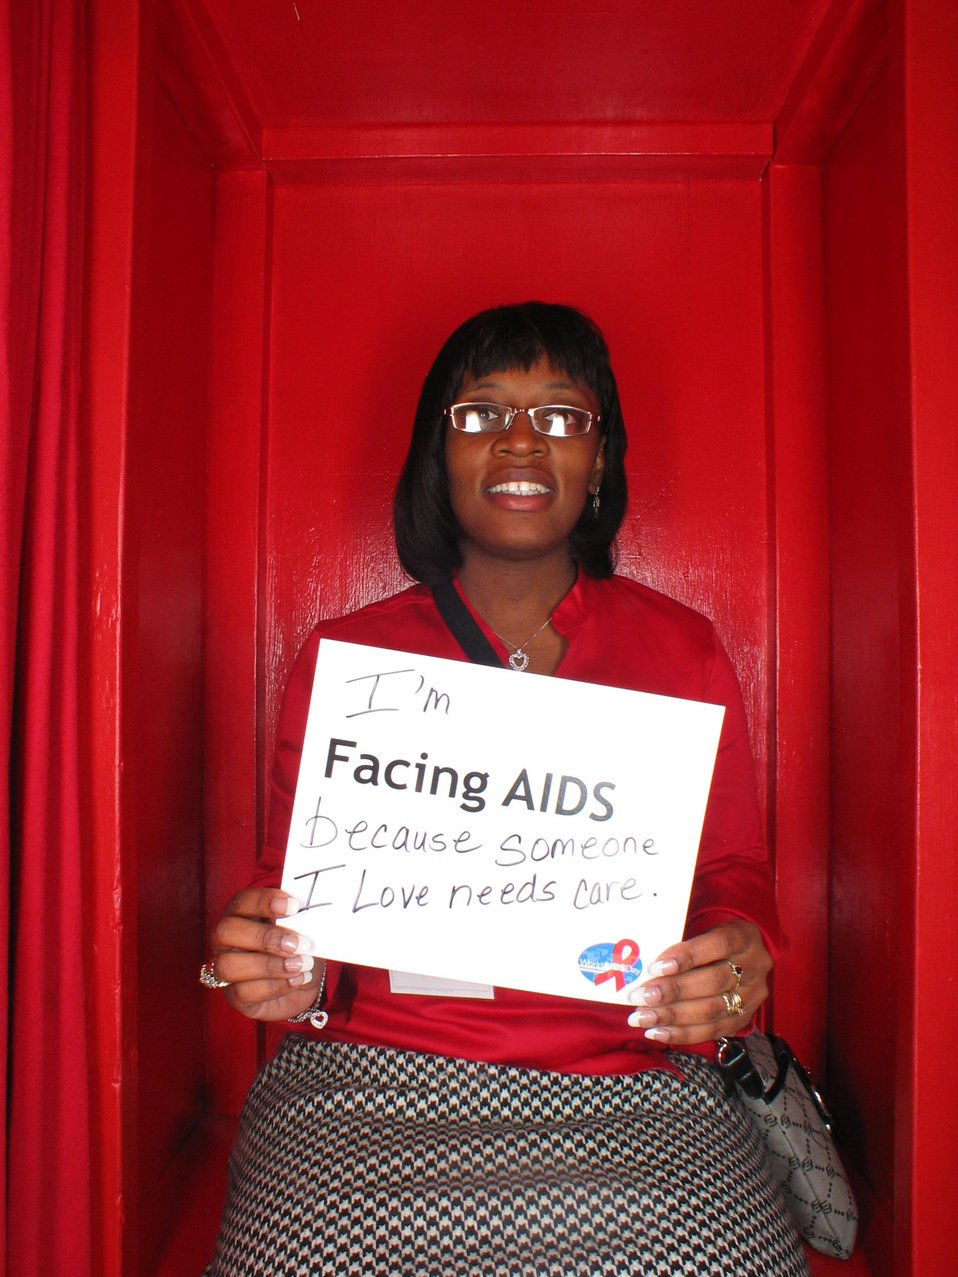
I'm Facing AIDS because some I love needs care.